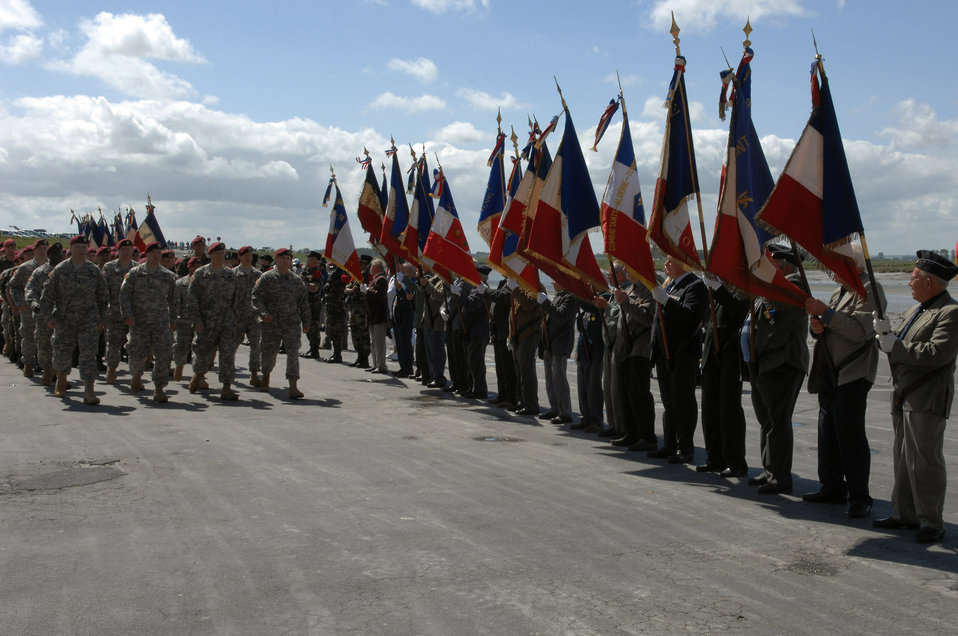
Remembering D-Day

Soldiers and Airman from the Southern European Task Force march in formation in front of World War II veterans from the Normandy invasion June 4 in Mont Saint Michel, France. On June 6, 1944, 160,000 allied troops began landing on the beaches of Normandy, France, for Operation Overlord, otherwise known as the D-Day invasion. More than 9,000 allied soldiers were killed or wounded on the 50-mile stretch of beach, but it marked the beginning of the end of Nazi Germany.